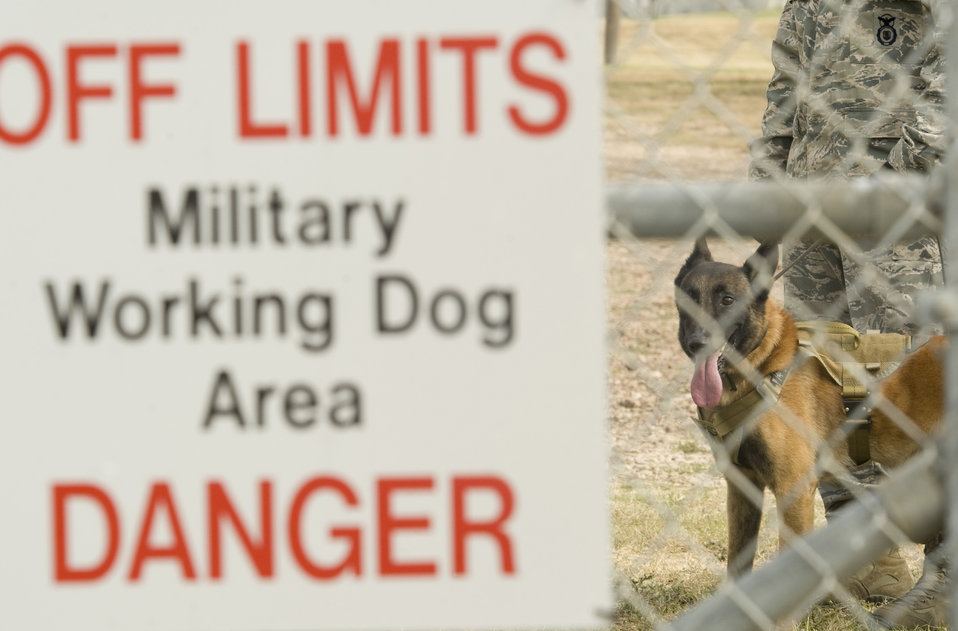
Military working dog handlers come together for joint competition

A military working dog and his handler are ready to showcase their skills during the Department of Defense Military Working Dog K-9 Trials held at Joint Base San Antonio-Lackland, Texas, May 4, 2012. The three-day event will test the competitors with deployment-type scenarios and obstacles as well as an iron dog competition.